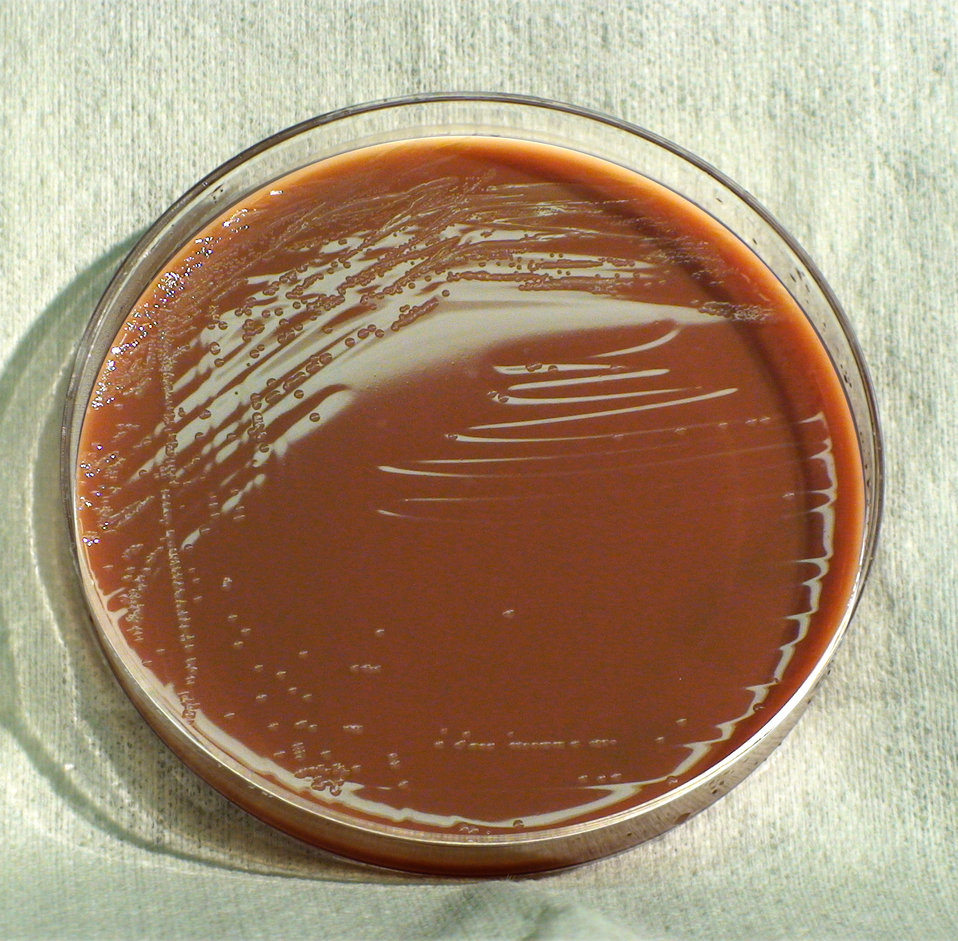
This photograph depicts the colonial morphology displayed by Gram-negative Haemophilus influenzae bacteria, which was grown on a medium of chocolate agar, for a 24 hour time period, at a temperature of 37�C. See PHIL 12449, for a closer view of these bacterial colonies.